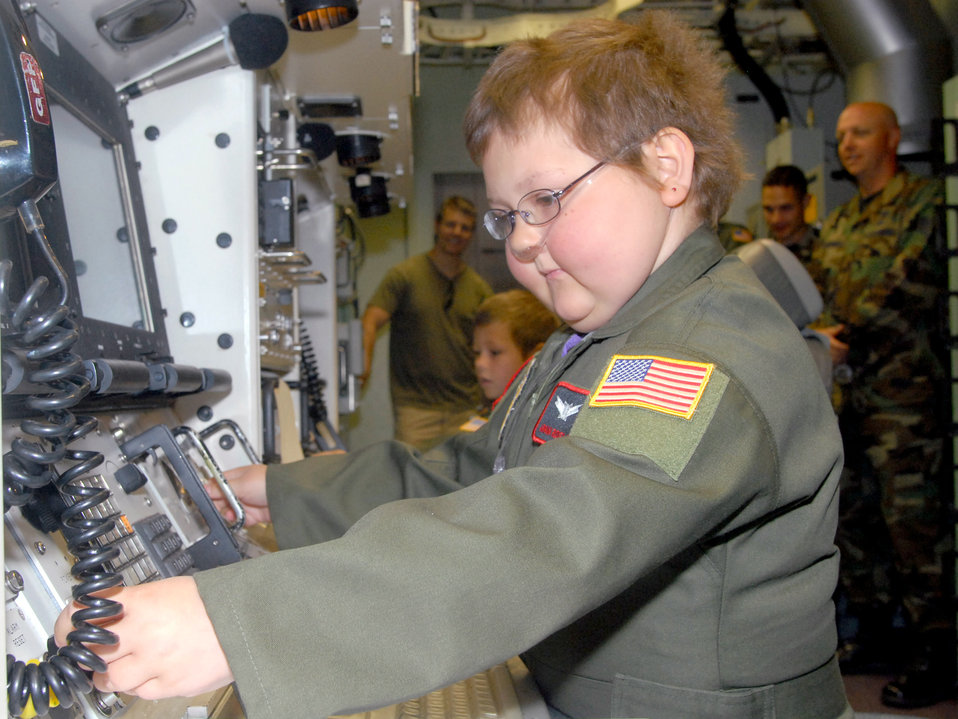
Child becomes first missileer for a day at F.E. Warren

Ariana Ruskey-Moffett simulates a key-turn sequence that would launch intercontinental ballistic missiles in the missile procedures trainer June 11 at F.E. Warren Air Force Base, Wyo. Ariana, a cancer survivor, participated in the base's first Missileer for a Day Program that allows special children to live the life of a missileer for a day